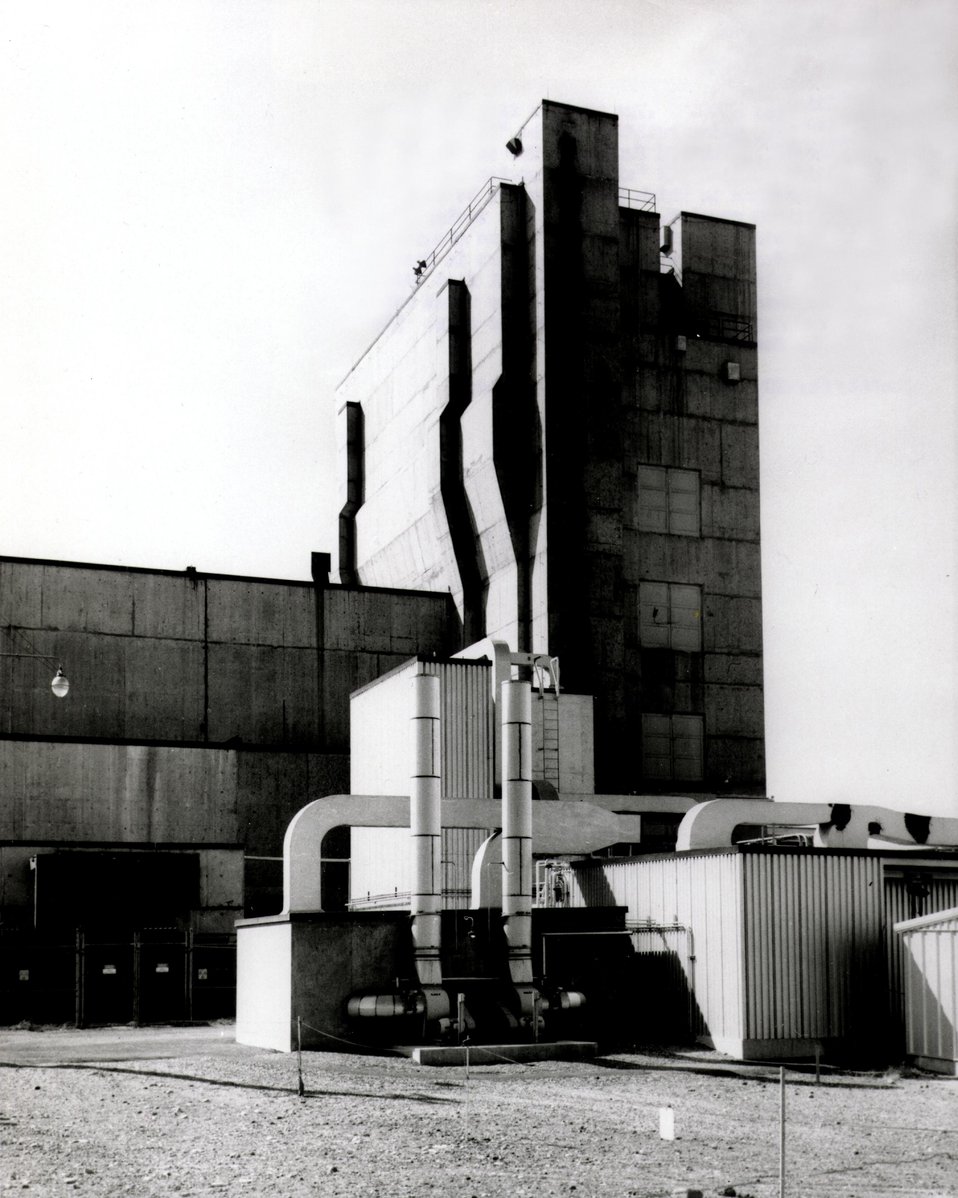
The world's first solvent-extraction processing building is the Redox building at the AEC's Hanford Project. The tall part of the building, called the 'silo,' contains the solvent-extraction column in which plutonium can be separated chemically from uranium. Circa 1968.